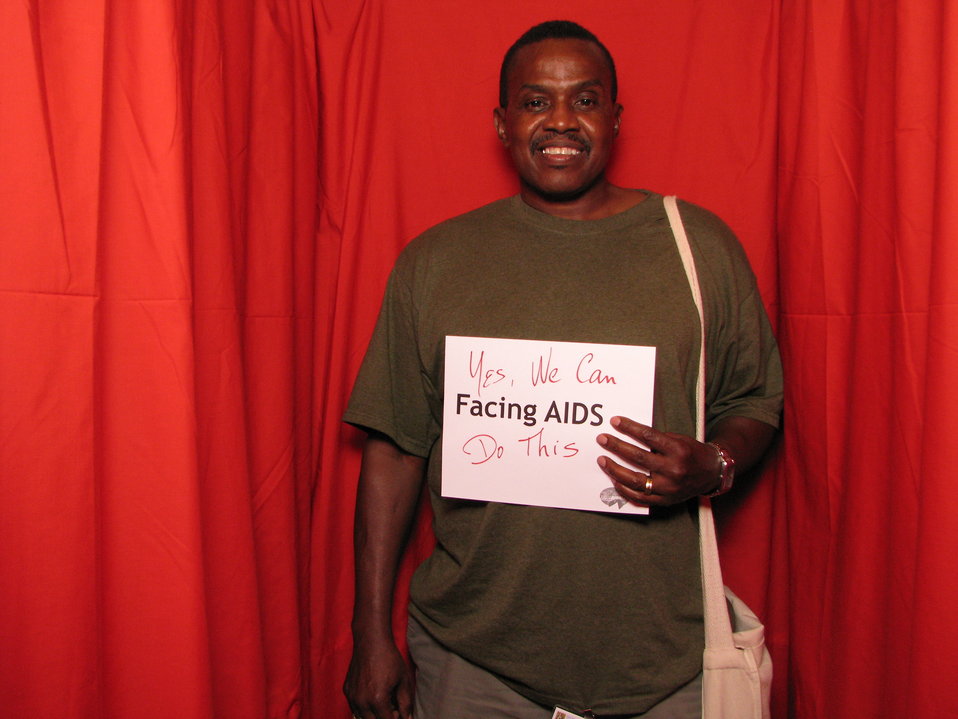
Yes, We Can, FACING AIDS. Do this.

From the AIDS.gov photo booth at the U.S. Conference on AIDS, September 2010 (Orlando, FL).